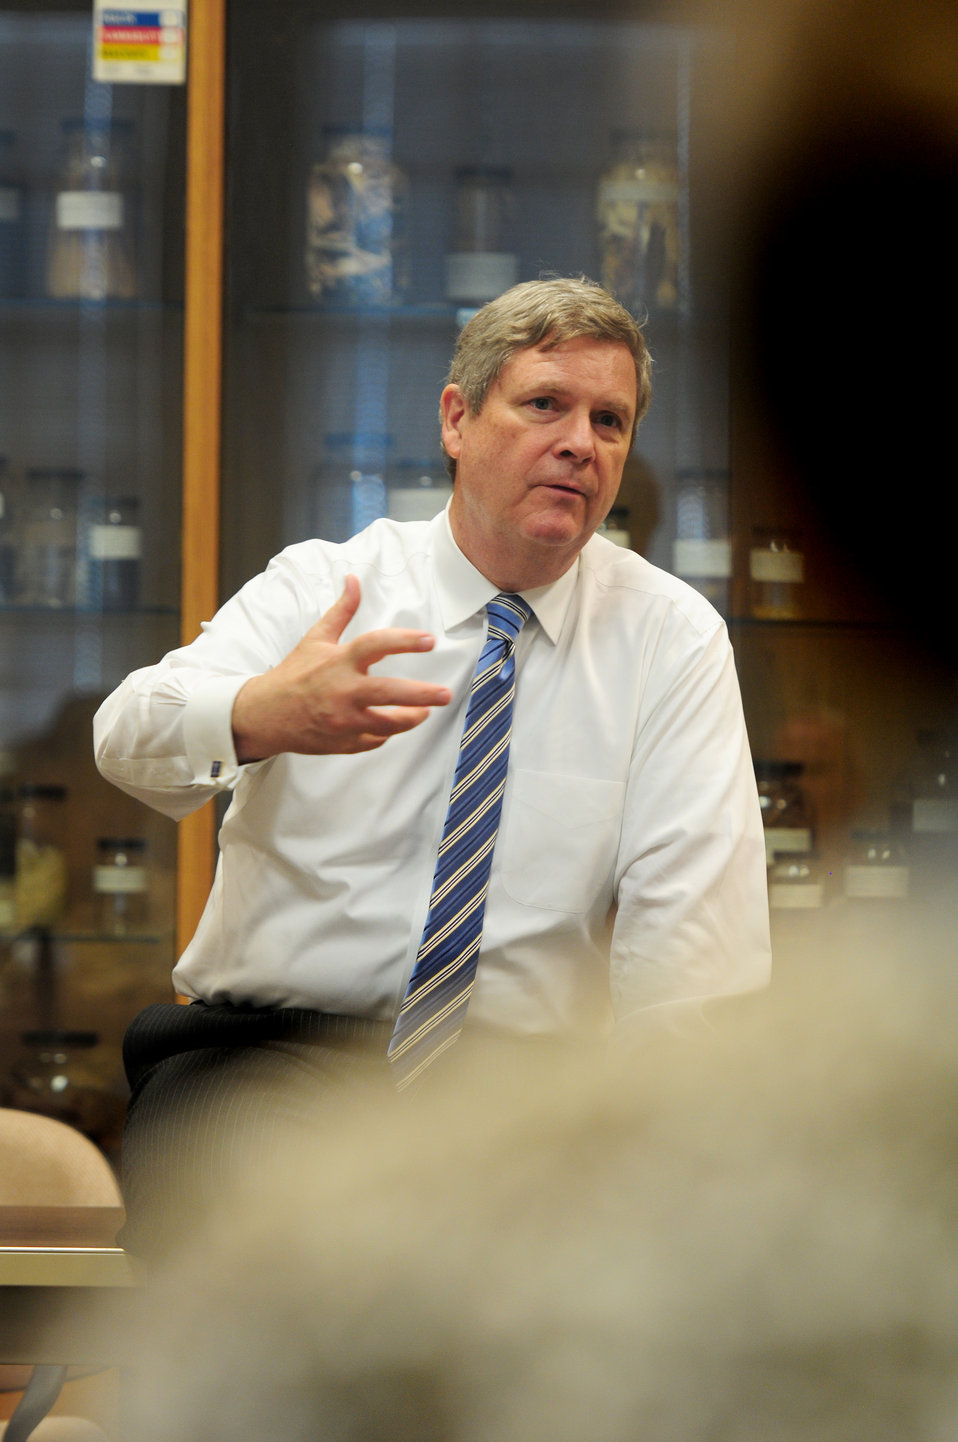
Agriculture Secretary Tom Vilsack speaks at a stakeholder meeting held at the State of Hawaii, Department of Agriculture Plant Quarantine Building in Honolulu, Hawaii, on Tuesday, January 10, 2012, to discuss USDA programs, agricultural challenges in Hawaii, and alternative energy.